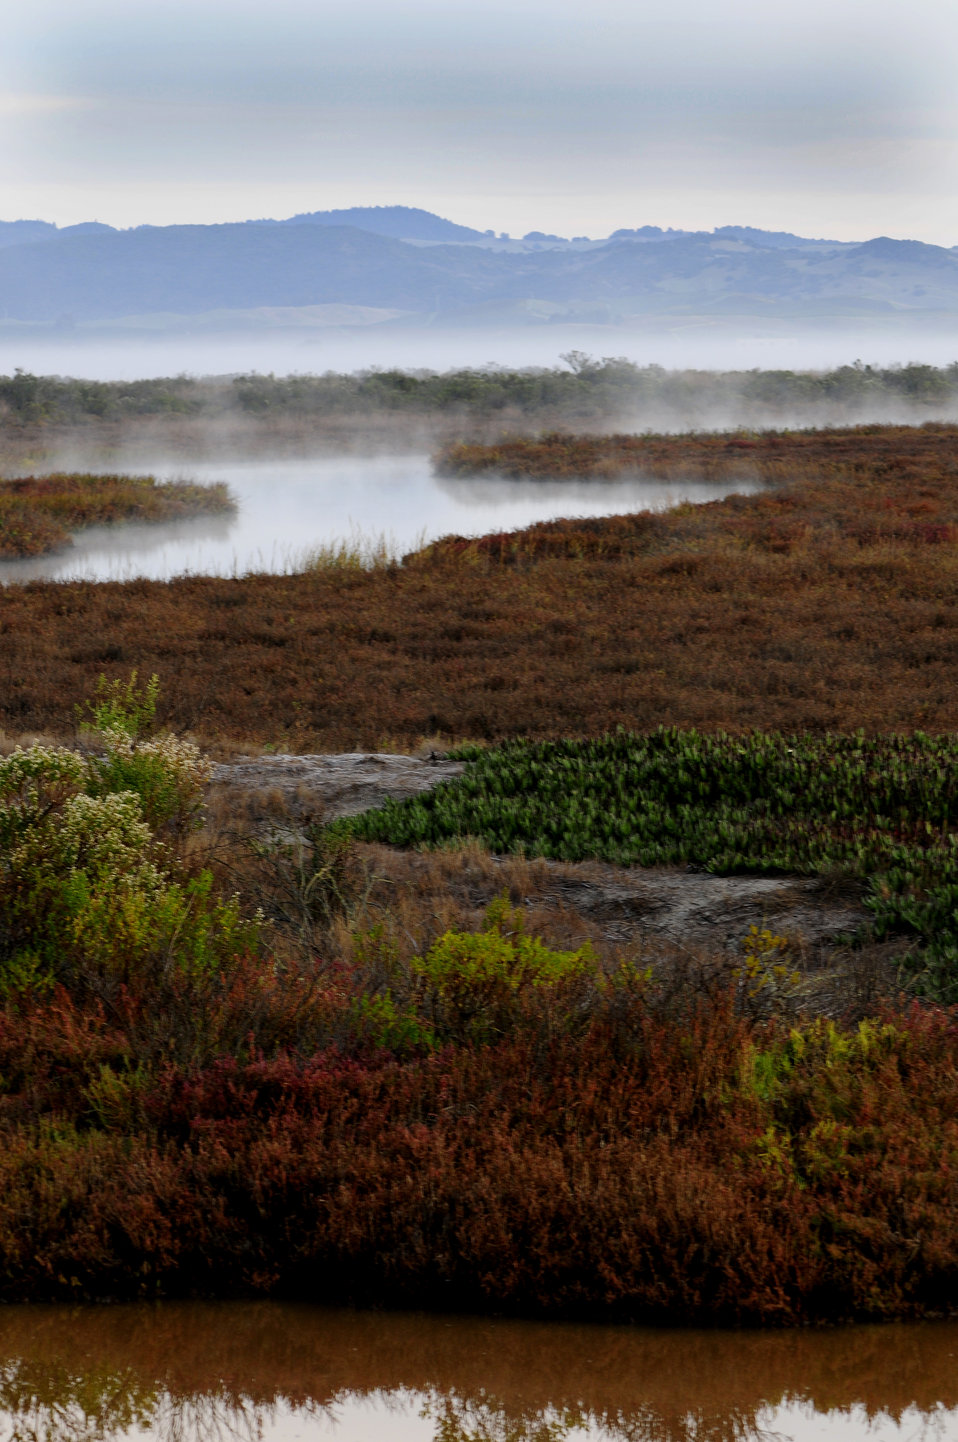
San Pablo Bay marsh

Only 8 percent of the San Francisco Bay’s original marshlands remaining viable today. Joshua Hull/USFWS